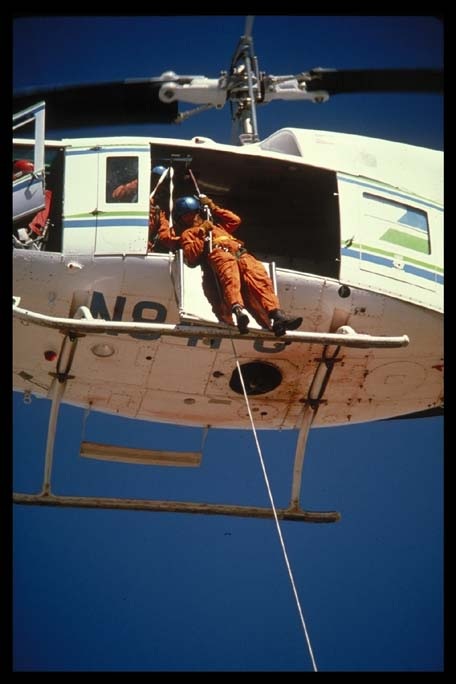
Rappeller